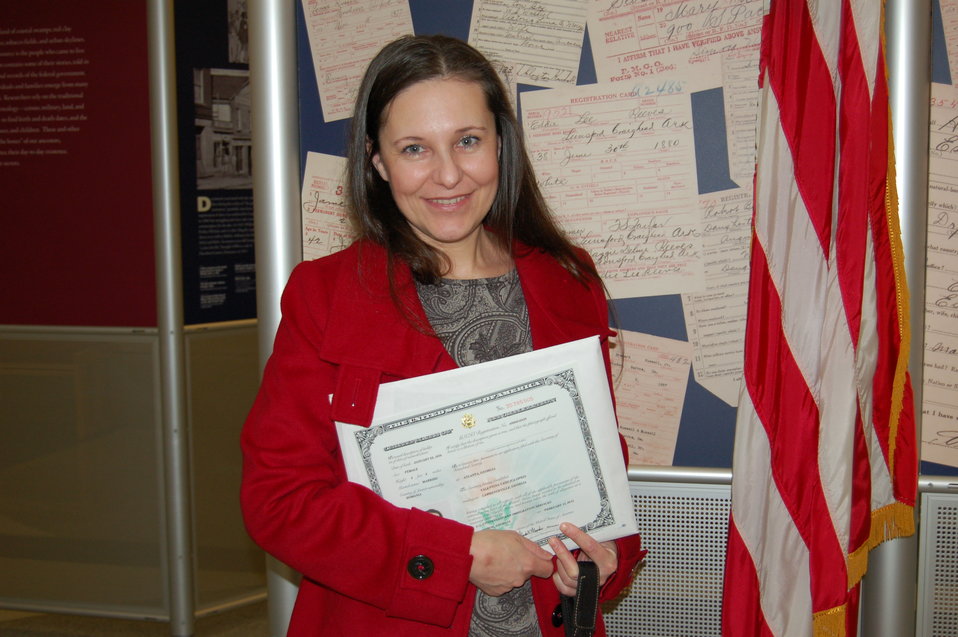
New Citizens